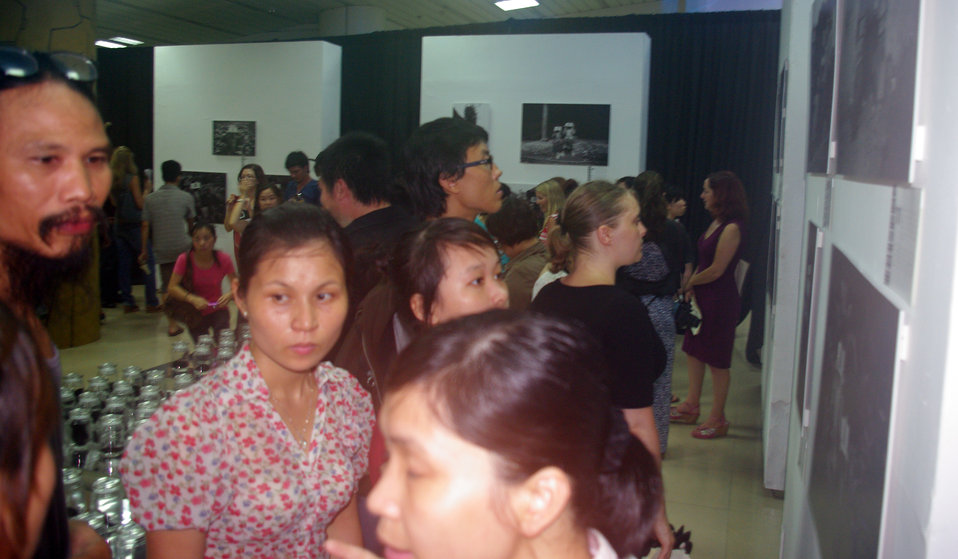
MTV EXIT opens Youth Forum in Hanoi